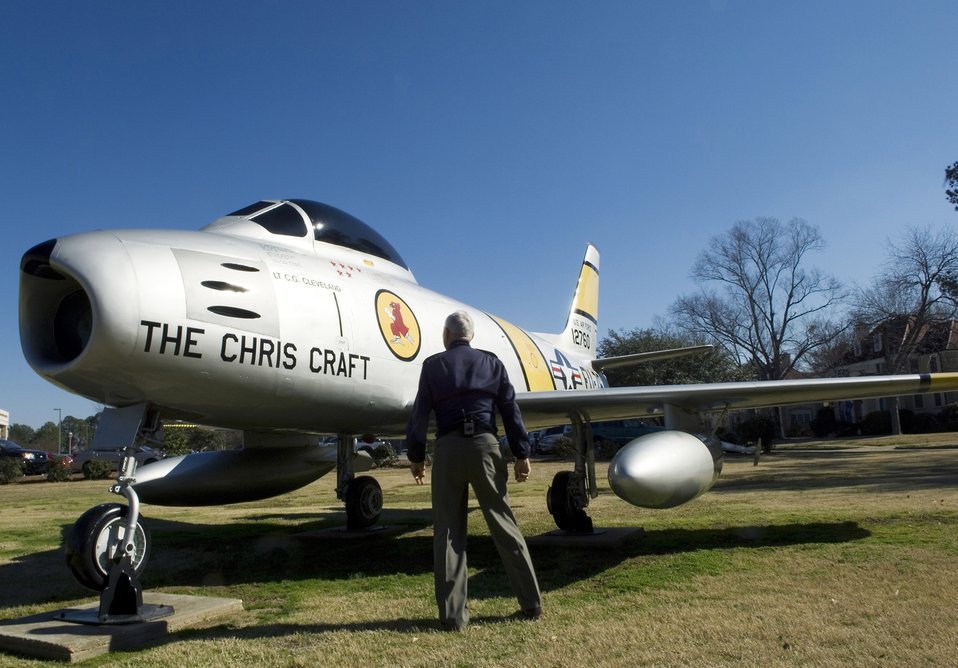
Retired general becomes Air Force's newest fighter ace

Retired Lt. Gen. Charles G. Cleveland stands before a remake